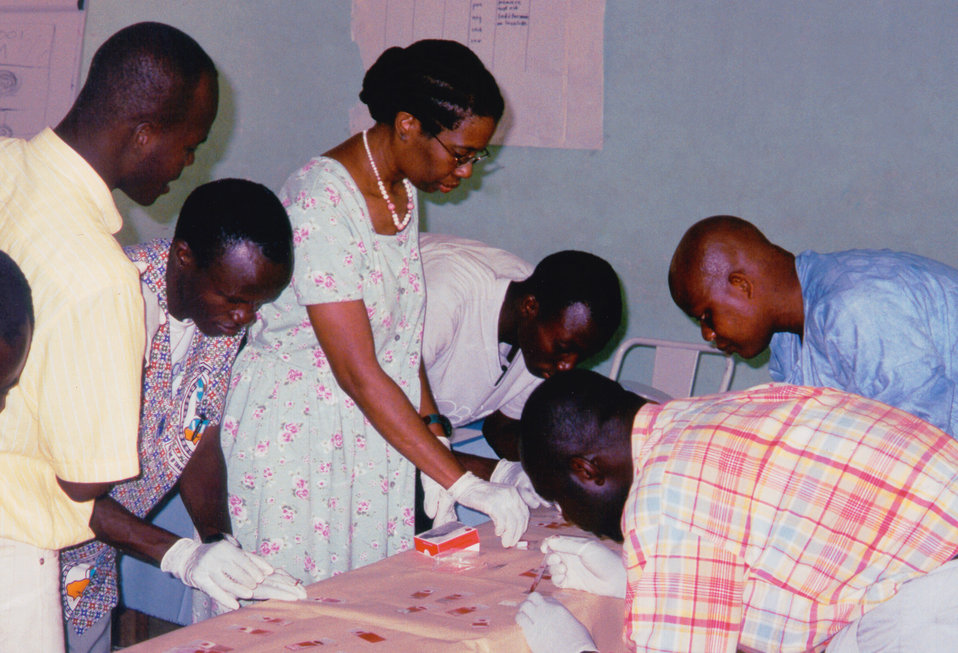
This was Gail Stennies, M.D. (standing Cntr) in Koupela, Burkina Faso in western Africa.